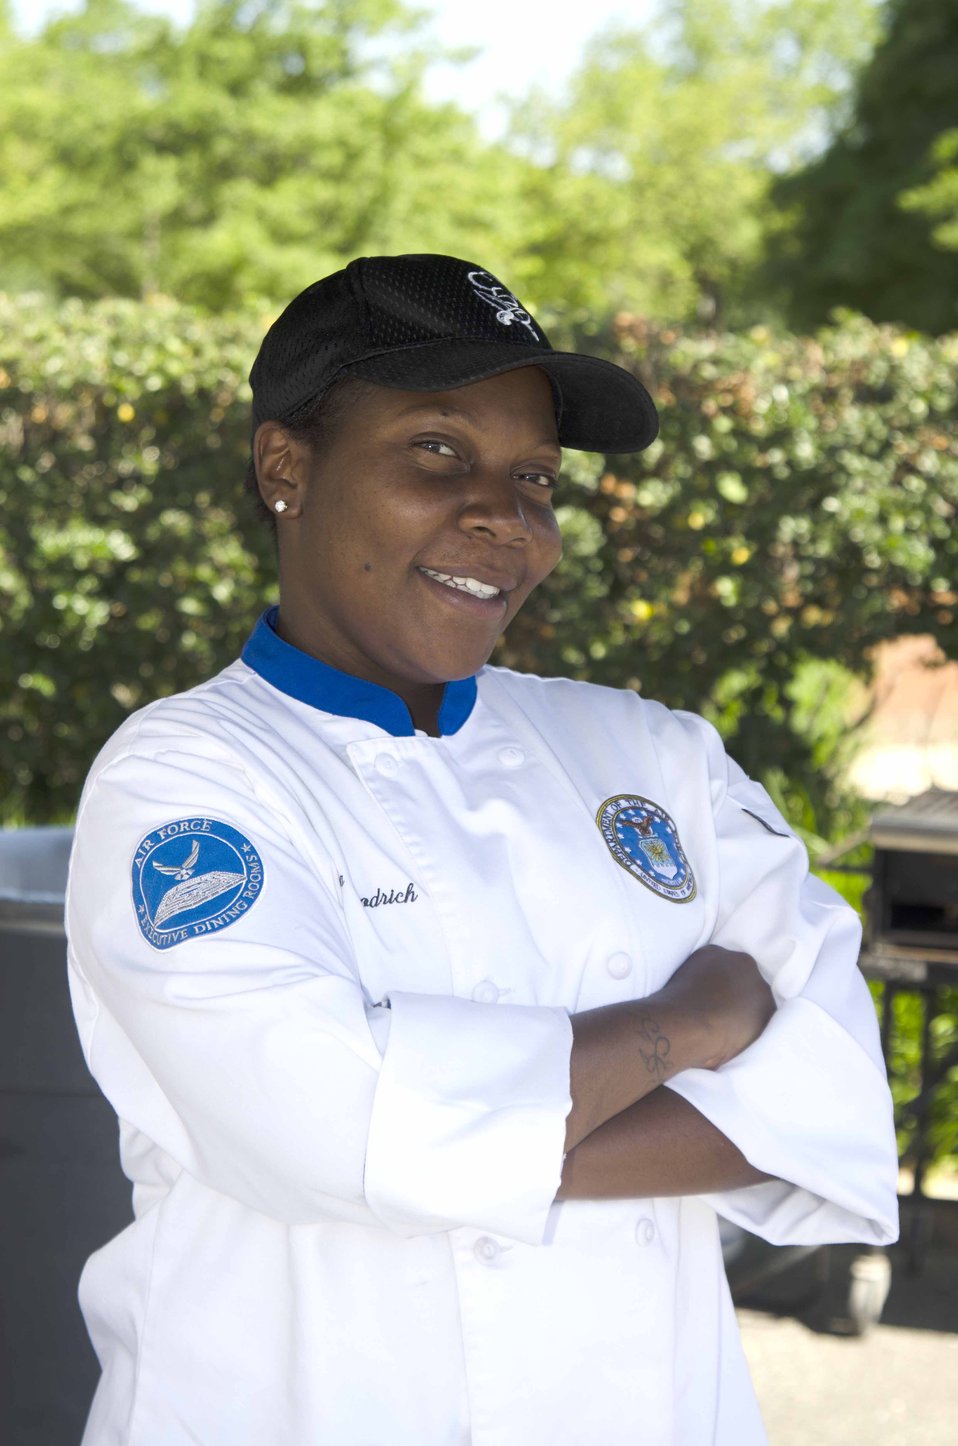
U.S. Air Force Staff Sergeant (SSgt) Tasha N. Goodrich prepares a meal at the Military Chefs barbeque battle held at the opening of the U.S. Department of Agriculture’s (USDA) Famers Market in the east parking lot at USDA on Friday, Jun. 6, 2014.